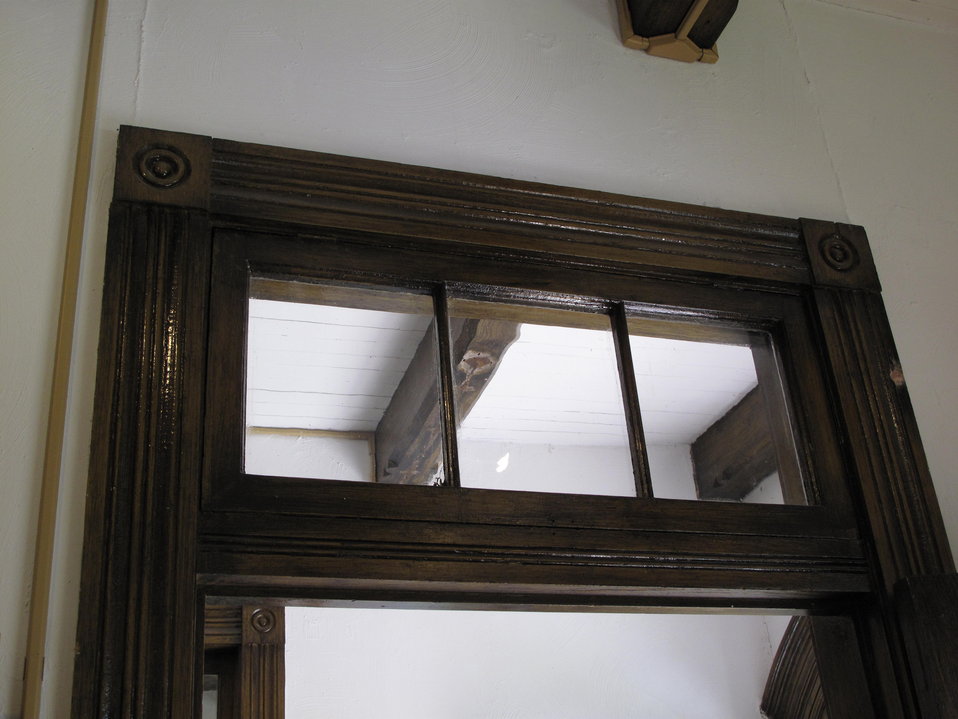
Leadville National Fish Hatchery

The visitor center, which was originally built in the late 1800's, features hand-crafted wood work and molding throughout.